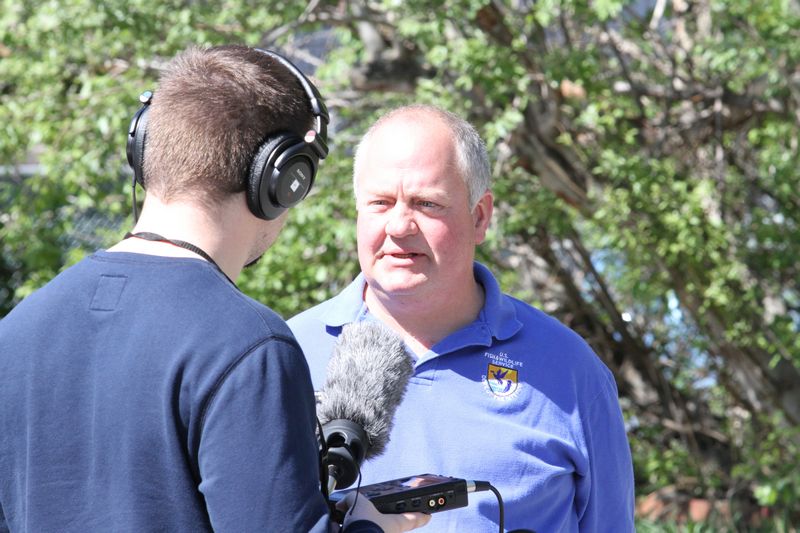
Press Conference on the polar bear holding module. USFWS/Rose Primmer